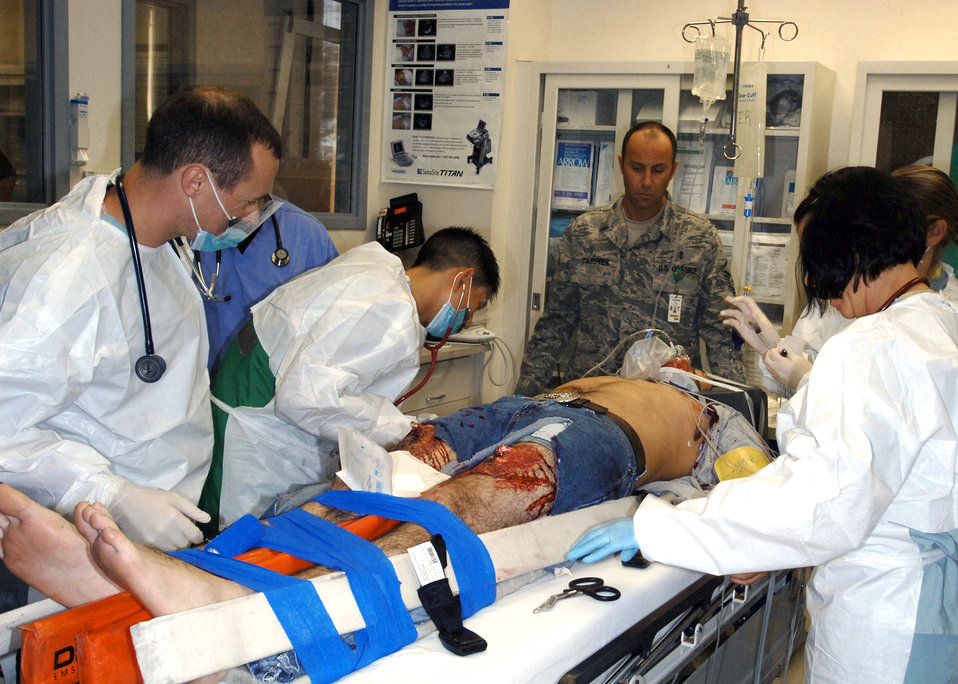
Air Force trauma center

A 59th Medical Wing Trauma Team performs emergency resuscitation procedures during a mock exercise. As of Jul 1, Wilford Hall Medical Center will no longer care for trauma patients. The hospital's trauma staff will move its Air Force trauma mission to Ft. Sam to create the San Antonio Military Medical Center by September, 2011, in compliance with the 2005 BRAC law. The WHMC emergency department remains open for non-trauma care.